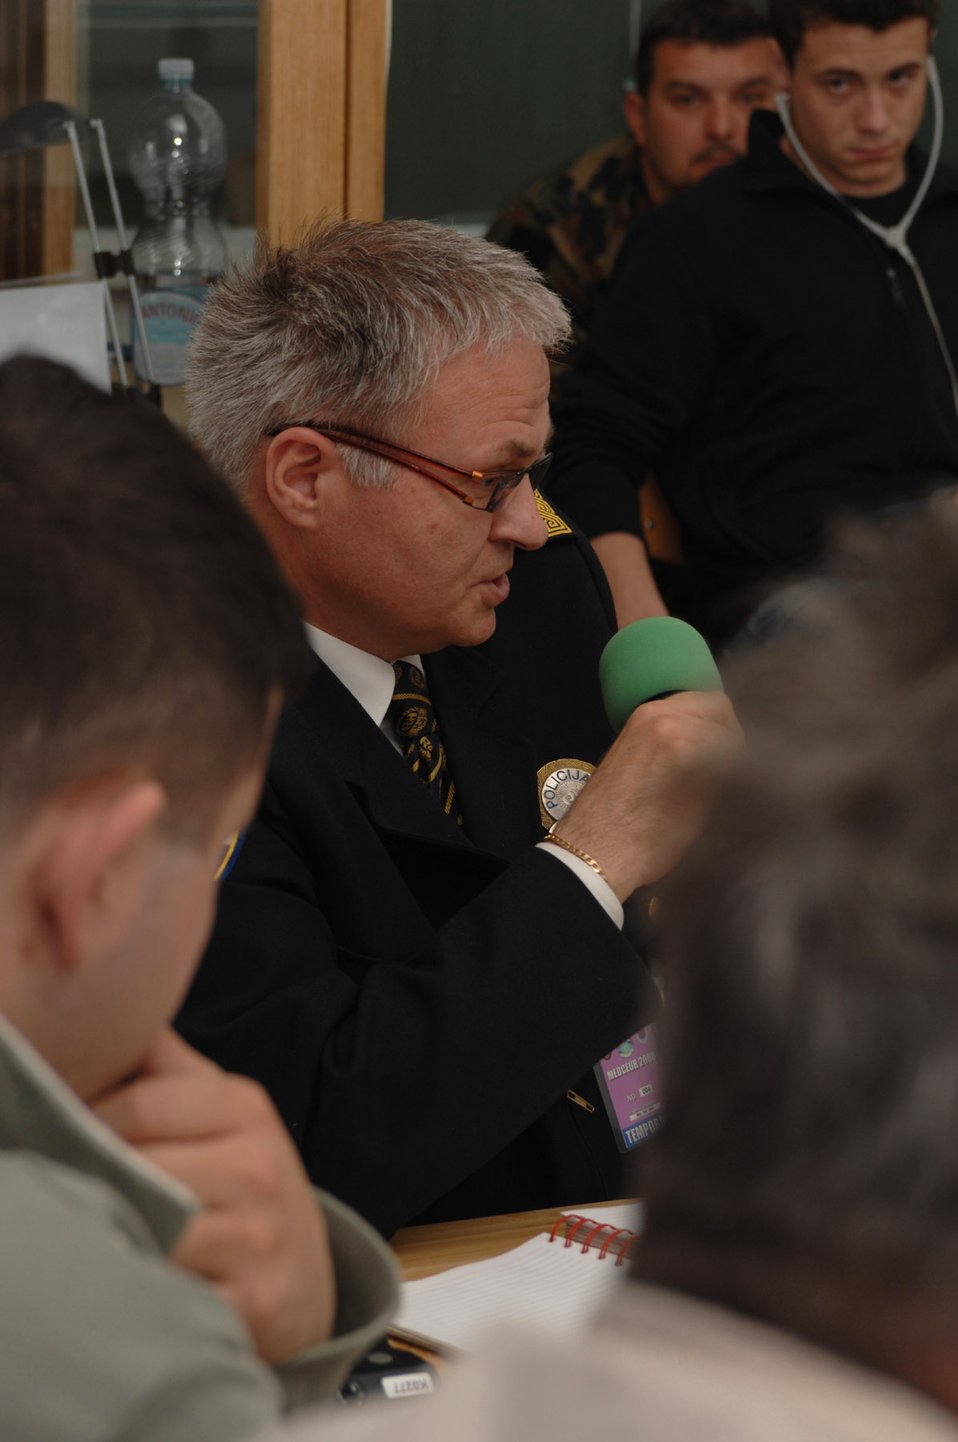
Medical training exercise supports partnership for peace

Croatian Chief of Police for the city of Split, Ninoslav Curic, shares emergency management procedures May 3 during the 2008 Medical Training Exercise in Central and Eastern Europe. The Emergency Management course is one of eleven courses offered during MEDCEUR. The involvement of the Croatian emergency services adds a realistic touch to the exercise. Fifteen nations are participating in the exercise now through 14. The exercise focuses on mass-casualty training scenarios and humanitarian aid in response to crises situations. MEDCEUR is a Joint Chiefs of Staff regional/multilateral exercise sponsored by U.S. European Command.